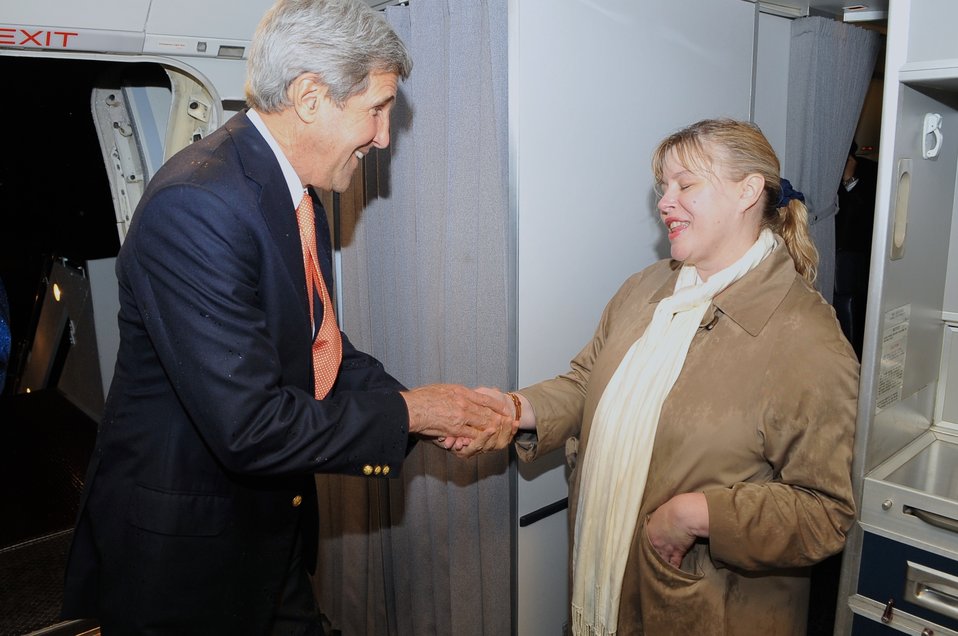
Secretary Kerry Thanks State Department Employee for Travel Assistance

U.S. Secretary of State John Kerry presents one of his commemorative coins to a rain-soaked Theresa Hunter, a State Department employee who had planned all of his trips but was departing for a new job at the Department of Homeland Security as he left for Africa on April 29, 2014.